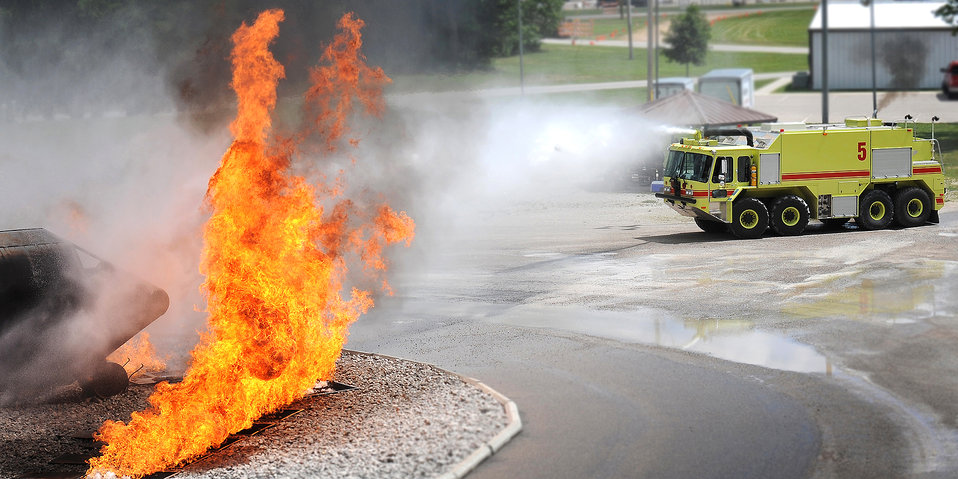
Guard firefighters train for emergencies

Firefighters use their truck to battle a live fire during an exercise held July 21, 2010, at the Combat Readiness Training Center in Alpena, Mich. The firefighters are with the Michigan Air National Guard's 127th Wing at Selfridge Air National Base.